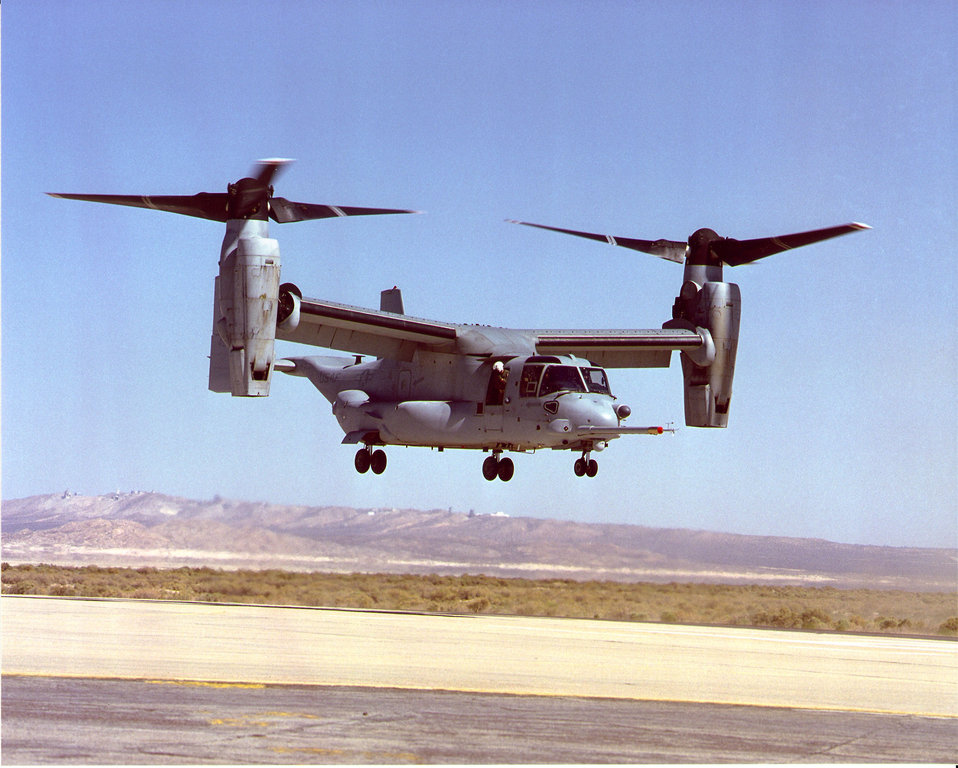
CV-22 Osprey

The tilt-rotor vertical takeoff and landing CV-22 Osprey will meet a long-standing Air Force Special Operations Command requirement for a vehicle that can conduct long-range, high-speed, vertical lift operations in adverse weather and night conditions.